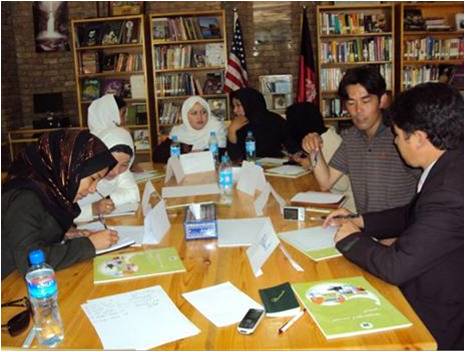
Words To and From Women